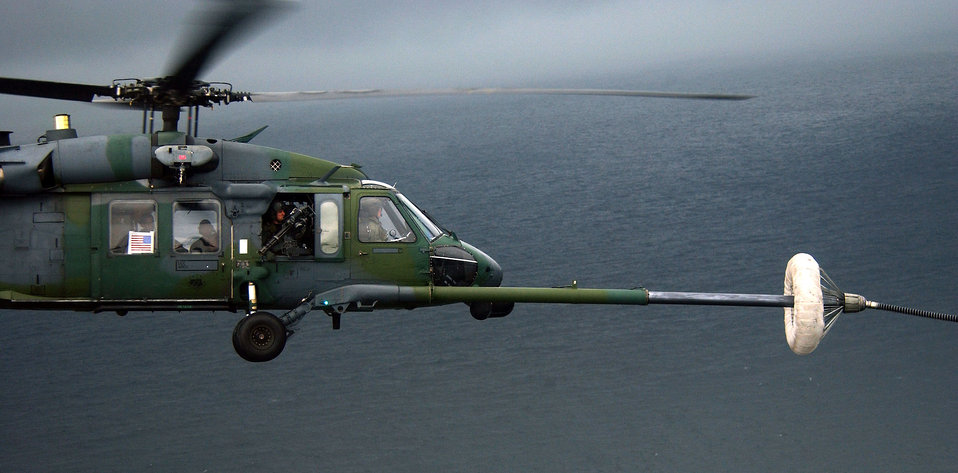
Top it off, please

LUNGI, Sierra Leone -- An HH-60G Pave Hawk helicopter refuels after an evacuation mission into the U.S. Embassy in Monrovia, Liberia, on July 28. The 398th Air Expeditionary Group is currently in Sierra Leone to provide personnel recovery and emergency evacuation capability for the humanitarian assistance survey team and the fleet antiterrorism security team in Liberia. The HH-60G is from the 56th Rescue Squadron at Naval Air Station Keflavik, Iceland.